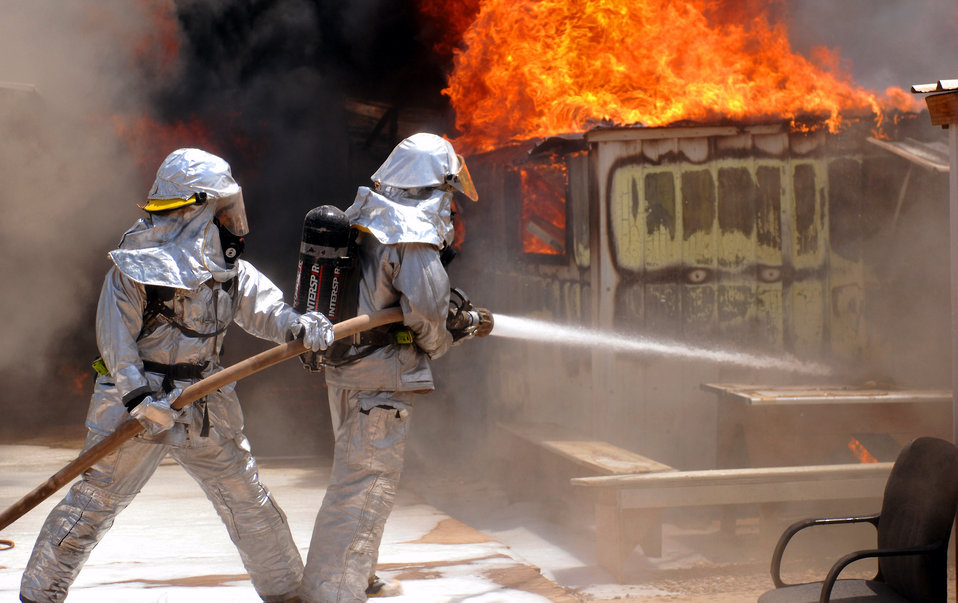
AF, Army firefighters

Firefighters battle to control a blaze July 22 that destroyed six metal framed buildings used as workspace, storage and living quarters at Joint Base Balad, Iraq. No injuries were reported from the fire, but a high temperature of 117 degrees forced three firemen to be treated at the Air Force Theater Hospital for heat stress-related injuries. All were later released. The cause of the fire is under investigation.